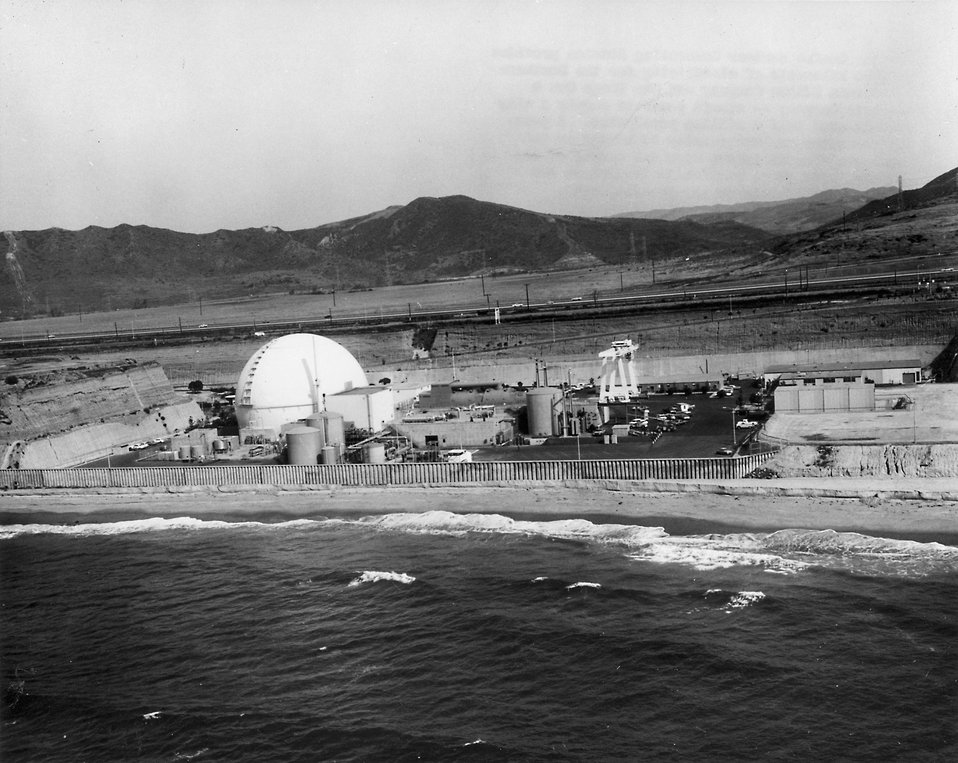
The San Onofre Nuclear Generating Station provides 430,000 kilowatts of electricity for the Southern California Edison Company and San Diego Gas & Electric Company-- enough power to supply a city of well over half a million people. Circa 1970.